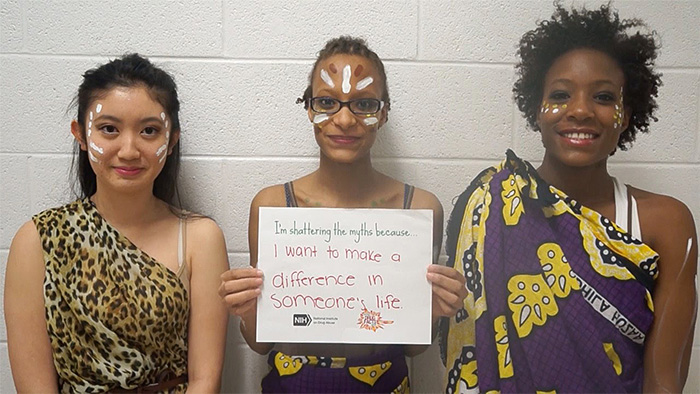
Make A Difference

Kicking off the 2014 NDFW, students from Ms. D’Anna’s 3rd period dance class from James Hubert Blake High School in Silver Spring, Md.